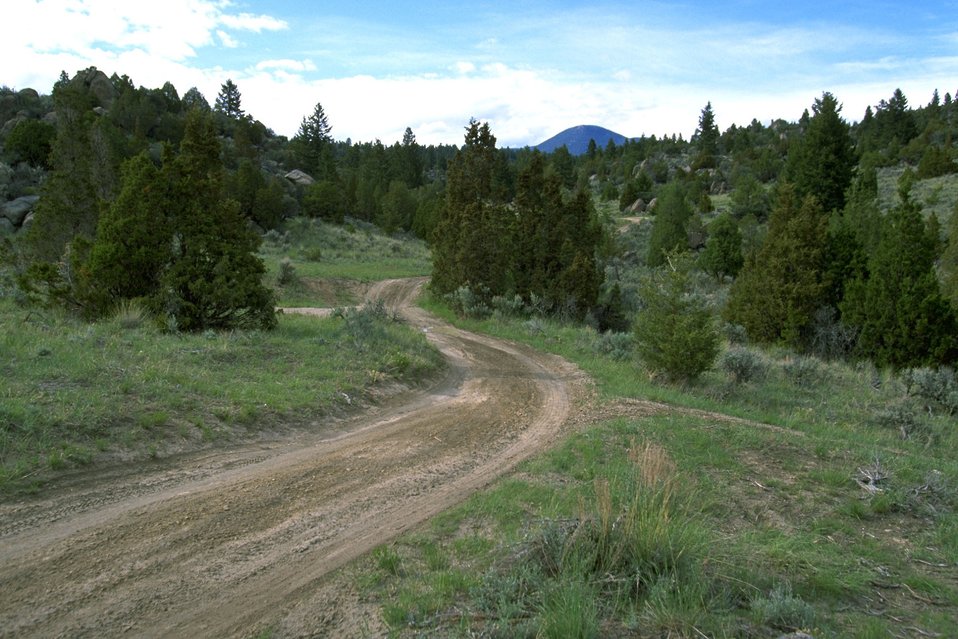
Road through the trees